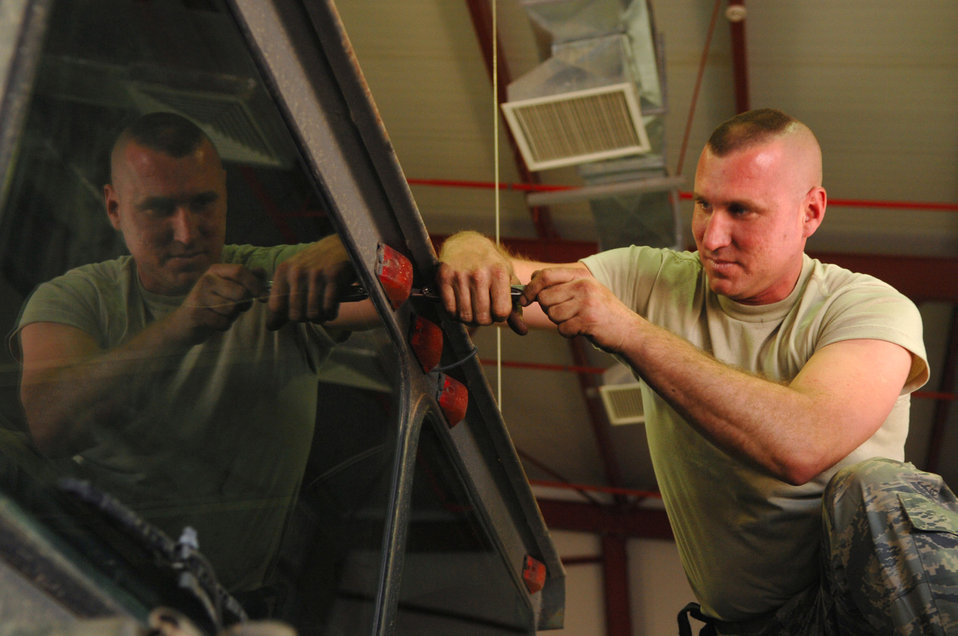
Keeping them rolling

Staff Sgt. Jason Jablonowski reinstalls the clearance lights on a refueling truck March 8 at Balad Air Base, Iraq. Sergeant Jablonowski, a 332nd Expeditionary Logistics Readiness Squadron refueling truck mechanic, is deployed from Luke Air Force Base, Ariz.